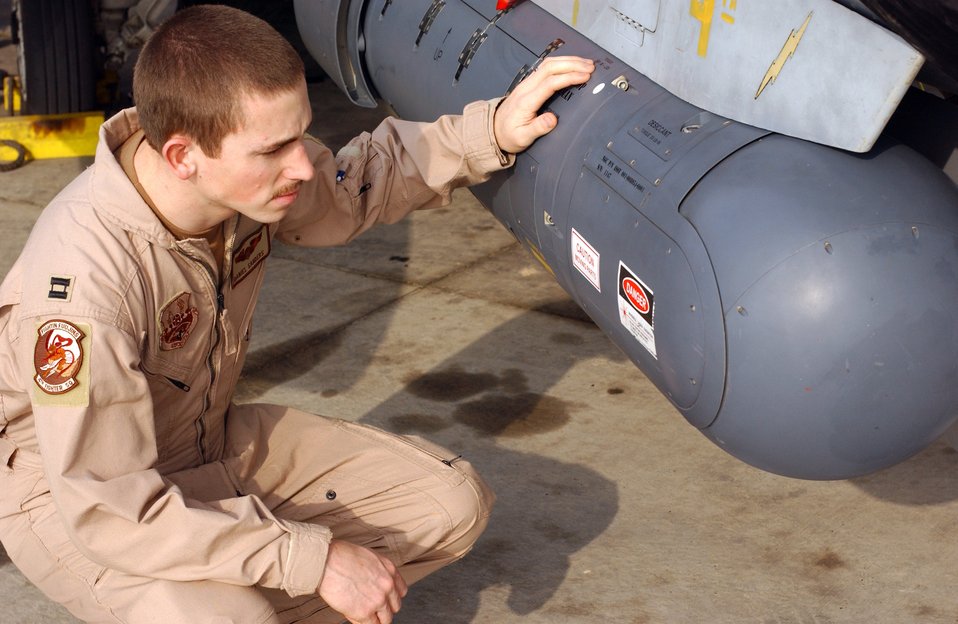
Falcon eyes roam Iraqi skies

BALAD AIR BASE, Iraq (AFPN) -- Capt. Dan Sanders inspects the litening pod on an F-16 Fighting Falcon. The pod can be used to provide valuable information to commanders on the ground. Captain Sanders is a pilot with the 4th Expeditionary Fighter Squadron.